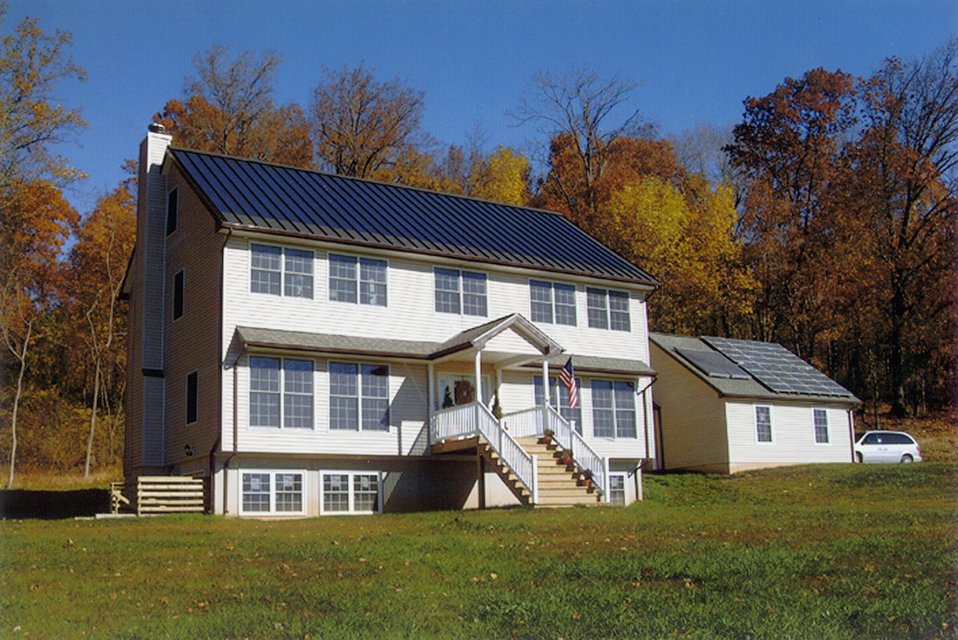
SOLAR PATRIOT MODULAR HOME IN NORTHERN VIRGINIA.

THE SOLAR PATRIOT, A MODULAR HOME DISPLAYED ON THE NATIONAL MALL IN APRIL, 2001 AS PART OF THE SOLAR FORUM 2001, WAS PERMANENTLY INSTALLED IN NORTHERN VIRGINIA. THIS ZERO ENERGY HOME PRODUCES ALL THE ENERGY IT NEEDS FEATURING PHOTOVOLTAIC SYSTEMS, PASSIVE SOLAR DESIGNS, GEOTHERMAL HEAT PUMP, COMPACT FLUORESCENT LIGHTING AND HIGH EFFICIENCY APPLIANCES. IT IS CONNECTED TO THE ELECTRICITY GRID, BUT HAS THE CAPABILITY TO OPERATE AT LEAST 24 HOURS WITHOUT ELECTRICITY FROM THE UTILITY.